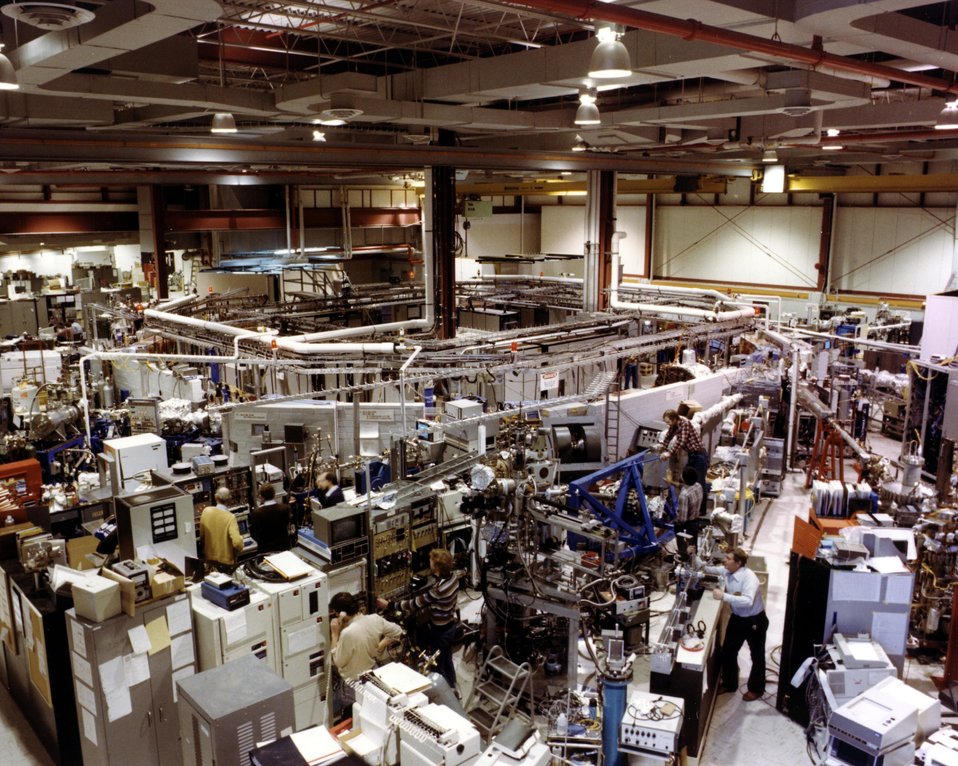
VIEW OF THE EXPERIMENTAL FLOOR OF THE ULTRAVIOLET RING.

THE NSLS WILL ACCELERATE AND STORE ELECTRONS AT A SPEED CLOSE TO THAT OF LIGHT TO PRODUCE AN ENTIRE SPECTRUM OF RADIATION, FROM INFRARED THROUGH X-RAYS, FOR UNIQUE APPLICATIONS IN MANY FIELDS OF SCIENCE. THE FACILITY WILL CONSIST OF TWO ELECTRON STORAGE RINGS. THE SMALLER RING WILL ACCELERATE ELECTRONS TO 700 MILLION ELECTRON VOLTS TO PRODUCE ULTRAVIOLET RADIATION, AND THE LARGER RING WILL ACCELERATE ELECTRONS TO 2500 MILLION ELECTRON VOLTS TO PRODUCE X-RAYS. THE ULTRAVIOLET LIGHT CAN BE USED TO STUDY: CHEMICAL REACTIONS AND STRUCTURES, THE PROPERTIES OF PURE METALS, ALLOYS, AND INSULATING MATERIALS, AND THE TRANSFER OF ENERGY IN BIOLOGICAL SYSTEMS. X-RAY LITHOGRAPHY MAY BE USED BY THE ELECTRICAL INDUSTRY IN THE PRODUCTION OF MICROSCOPIC PRINTED CIRCUITS FOR COMPUTERS AND MICROPROCESSORS. X-RAY MICROSCOPY COMPLEMENTS ELECTRON MICROSCOPY, PERMITTING OPERATIONS THAT WOULD BE IMPOSSIBLE WITH AN ELECTRON MICROSCOPE.